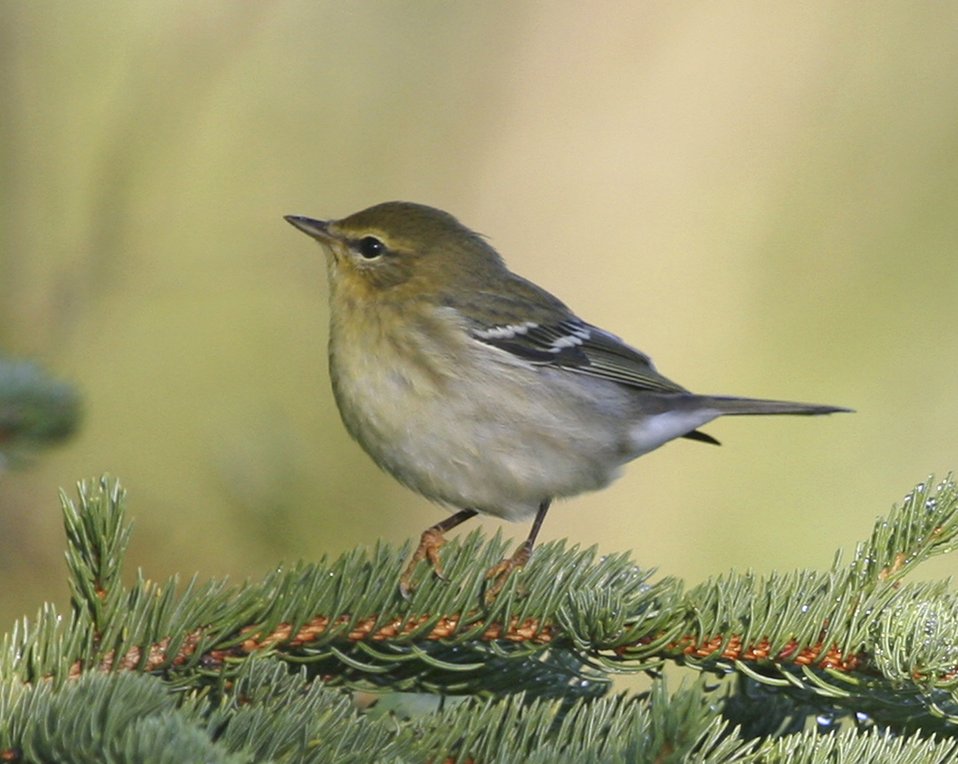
A blackpoll warbler bird in fall plummage; Photo was taken at BLM's Campbell Tract, Anchorage; Donna Dewhurst Collection